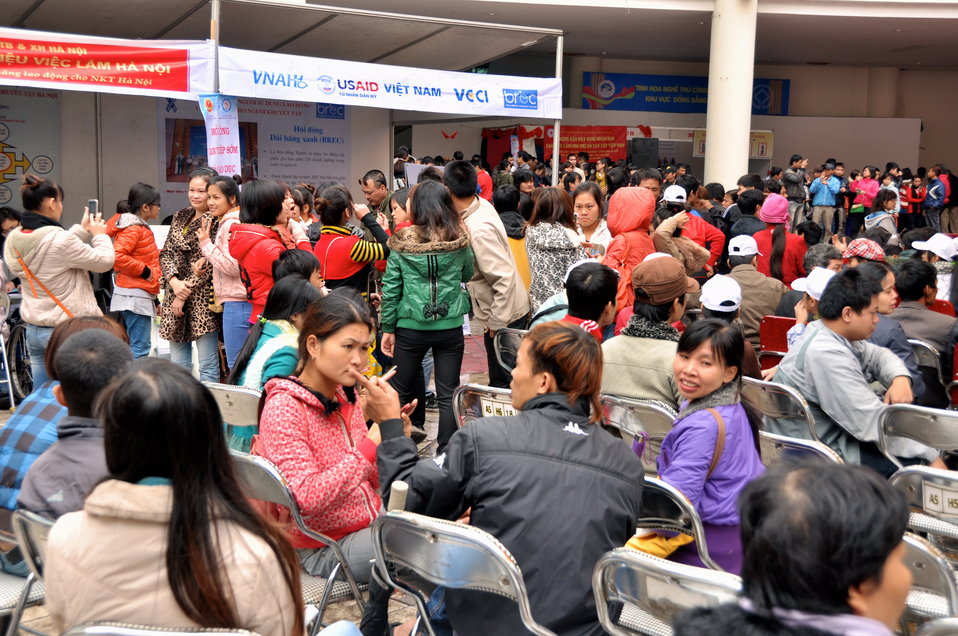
USAID joins celebration of International Day of Persons with Disabilities in Hanoi, Vietnam

December 2, 2012